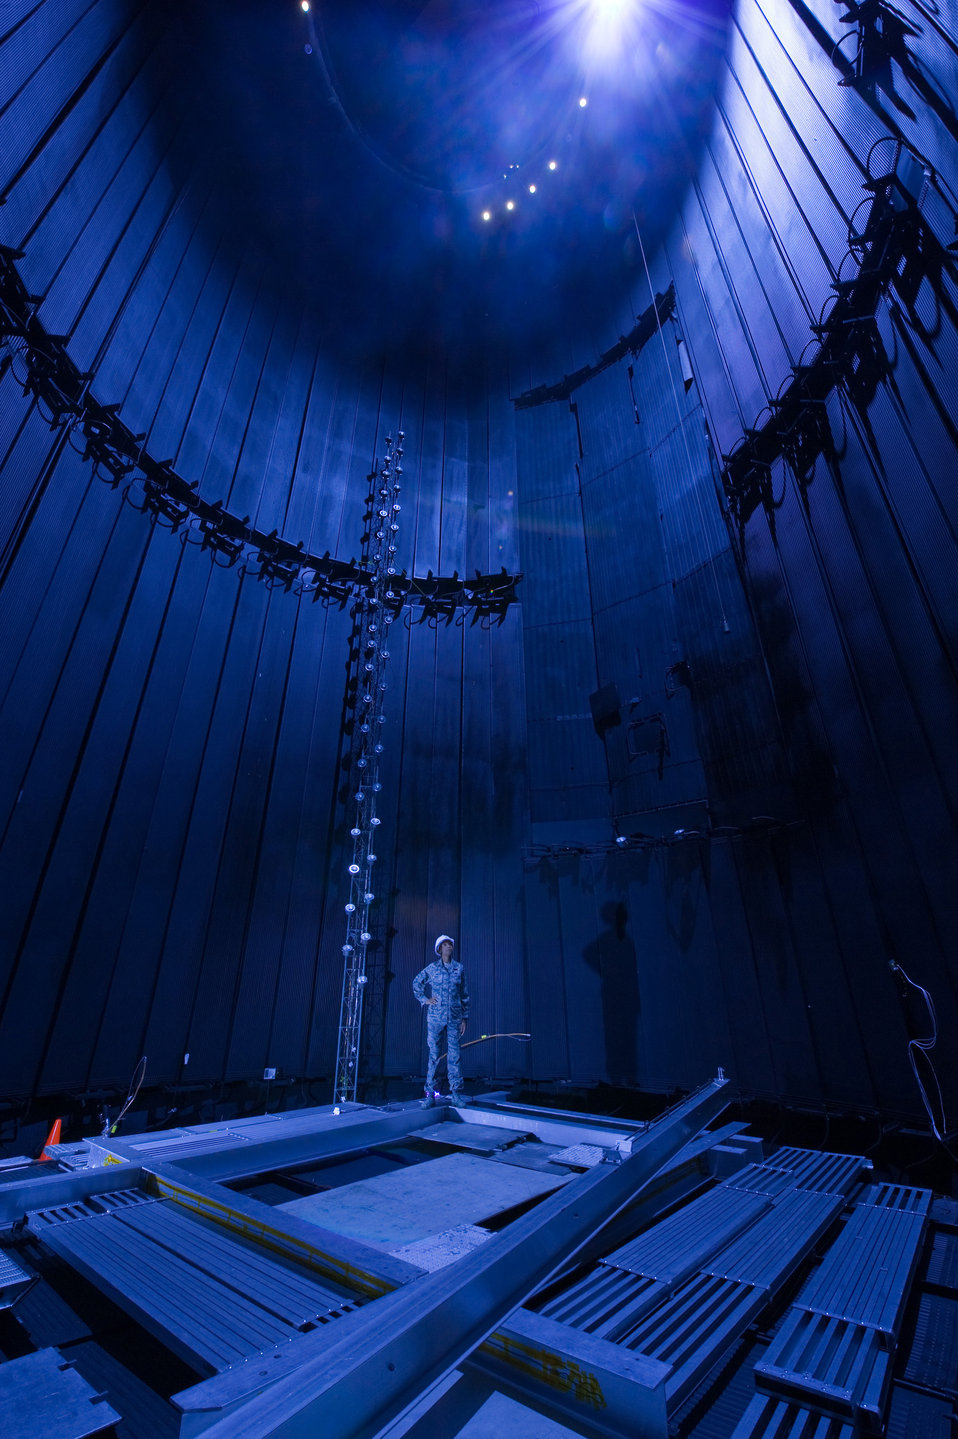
Wind power at Arnold AFB

Capt. Catercia Isaac checks out the inside of the Mark-1 space chamber Oct. 5, 2009, at Arnold Air Force Base, Tenn. Capt. Issac is a physicist and the flight commander of the 718th Test Squadron. The Mark 1 Test Facility is a state-of-the-art space environment simulation test chamber for full-scale space systems testing.